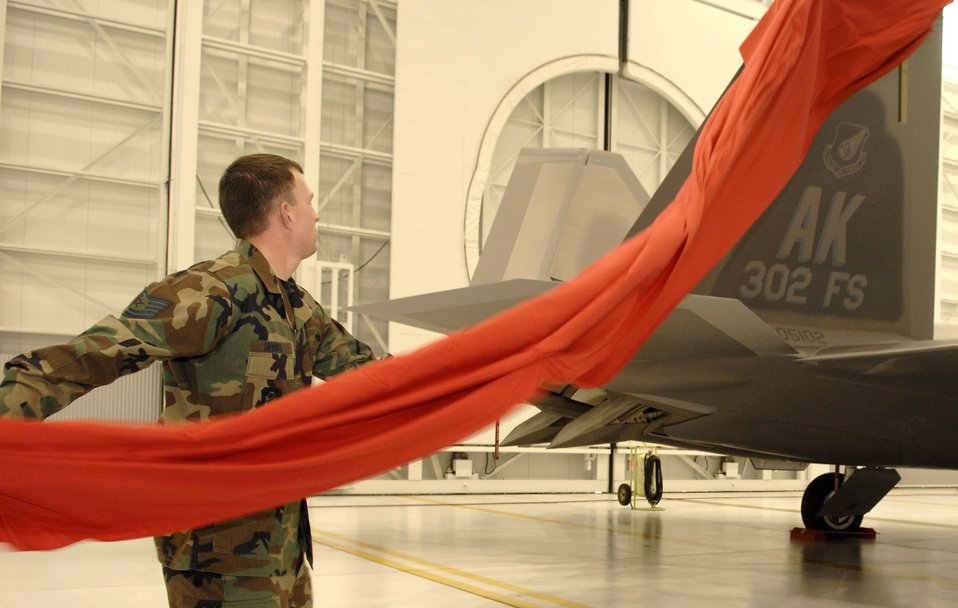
Air Force Reserve stands up first F-22 Raptor unit

Tech. Sgt. Paul Hennig unveils the newly painted 302nd Fighter Squadron tail markings Oct. 2 following the 477th Fighter Group activation ceremony at Elmendorf Air Force Base, Alaska. The 477th FG, and its subsequent squadrons, are now the first and only Reserve F-22 Raptor unit in the Air Force.